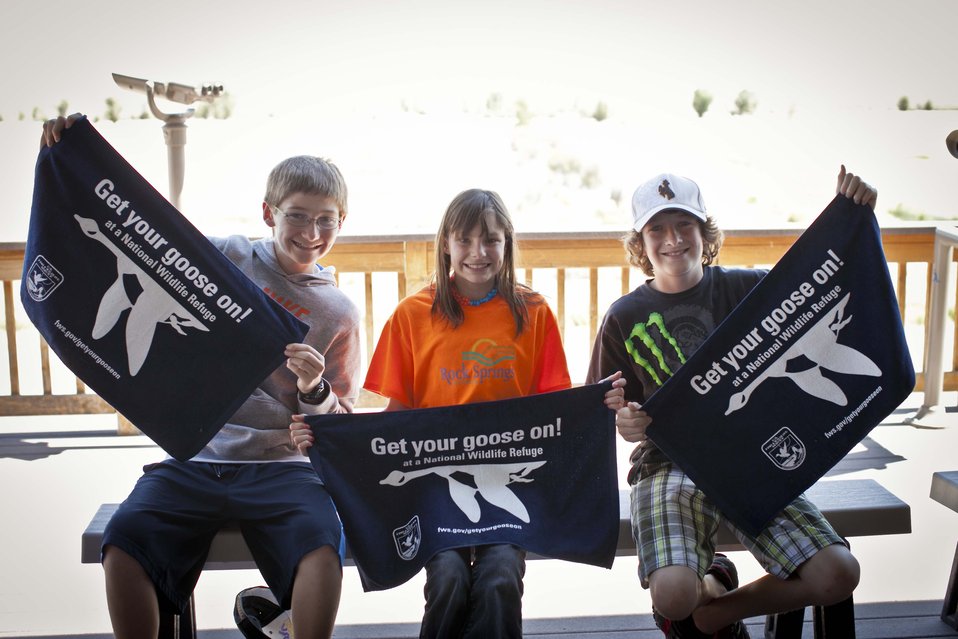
Get Your Goose On!

Pilot Butte Elementary students pose with their 'Get your goose on!' towels at Seedskadee NWR.